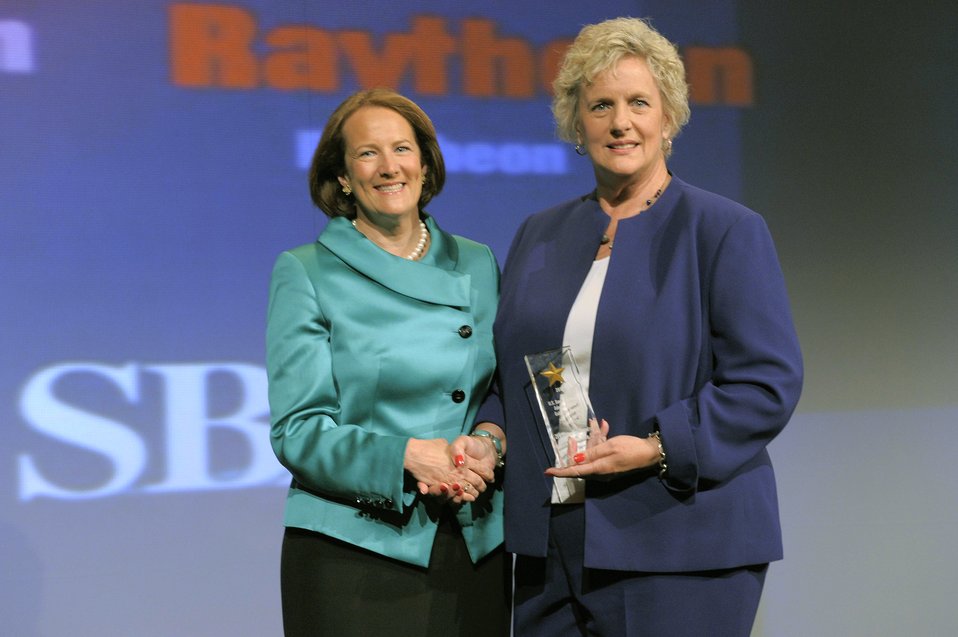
Gold Star Award

Karen G. Mills (left) and Judith Croxton pose at the 2010 SBA National Small Business Week event May 25, 2010, in Washington, D.C. Ms. Mills is an administrator with the U.S. Small Business Administration. Ms. Croxton is the director of business operations at Shaw Air Force Base, S.C.